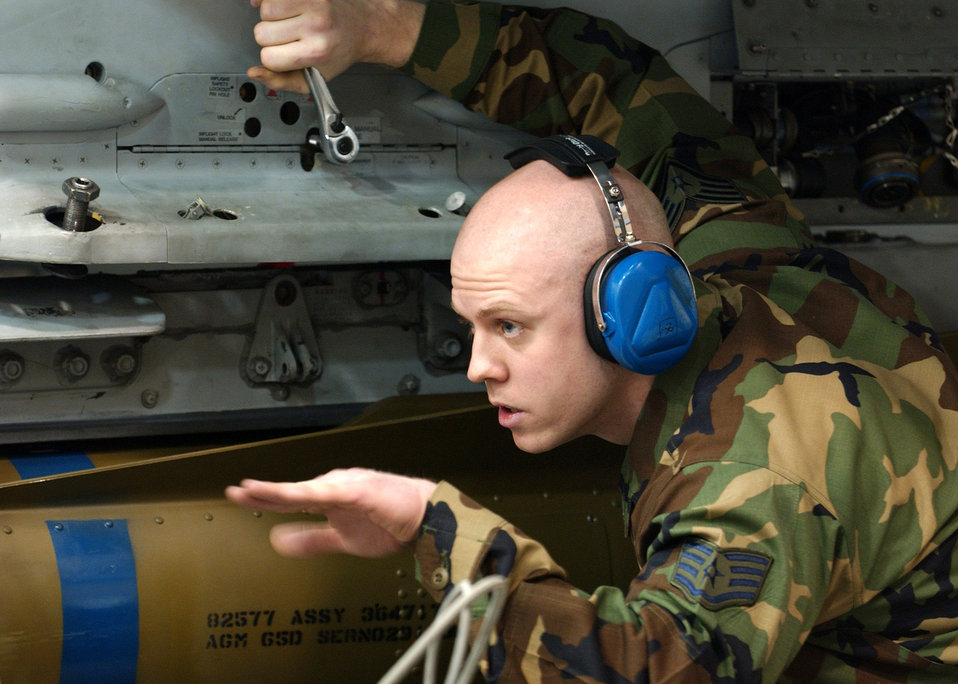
Competing for load crew honors

Staff Sgt. Aaron Slay motions to a team member positioning an air-to-ground missile on an F-16 Fighting Falcon during the Weapons Standardization Load Crew of the Year Competition Jan. 11 at Eielson Air Force Base, Alaska.